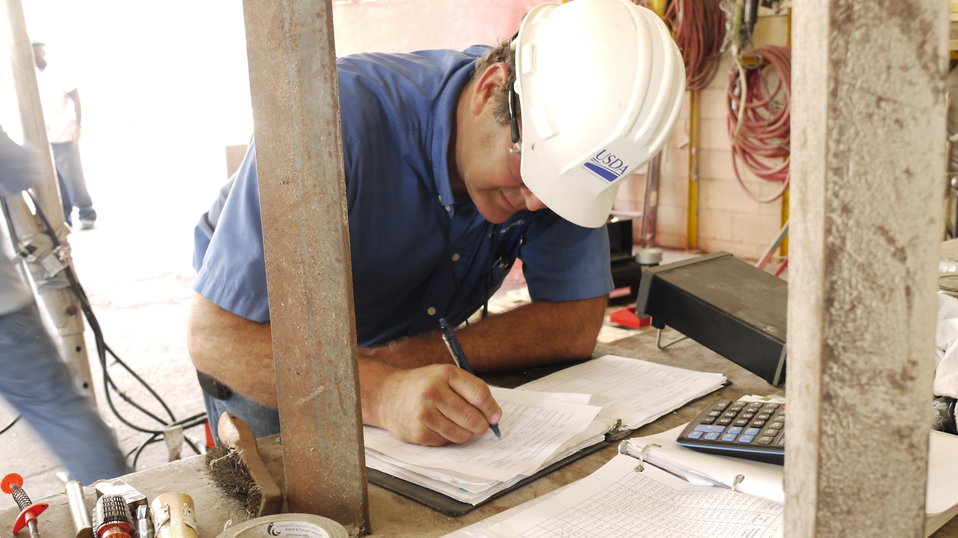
U.S. Department of Agriculture’s (USDA) Grain Inspection, Packers, and Stockyard Administration (GIPSA) industrial specialist Troy Kramer records results during calibration of the test weights at the grain elevator in Myrtle, LA on Aug. 6, 2013. USDA GIPSA provides official testing of Automatic Bulk Weighing (Hopper) scales used in official certification of grain weight.